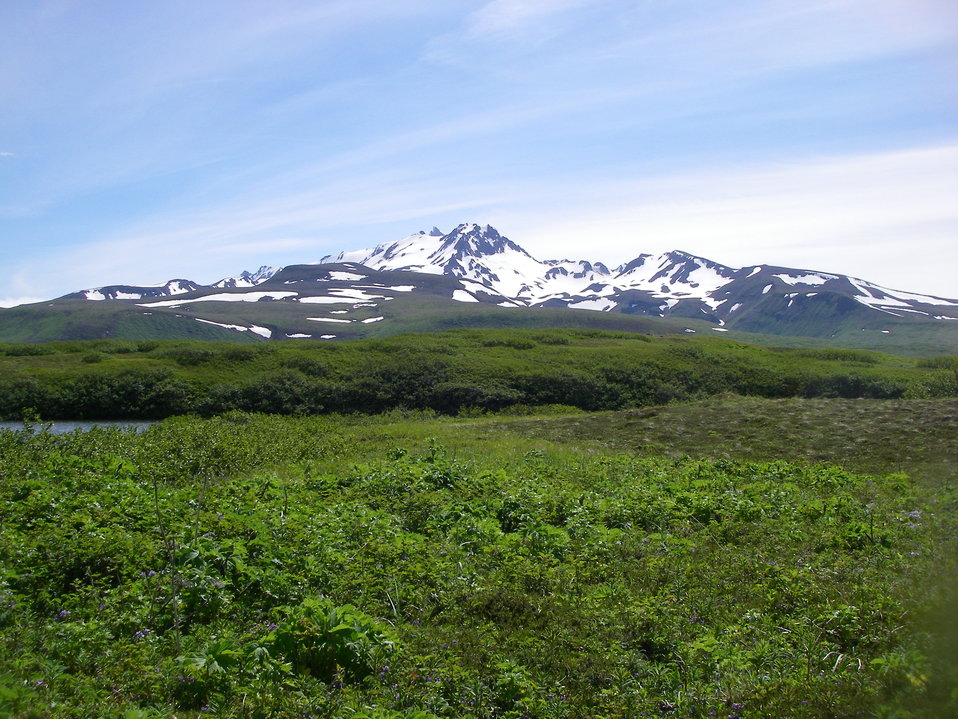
Frosty Peak

Izembek National Wildlife Refuge